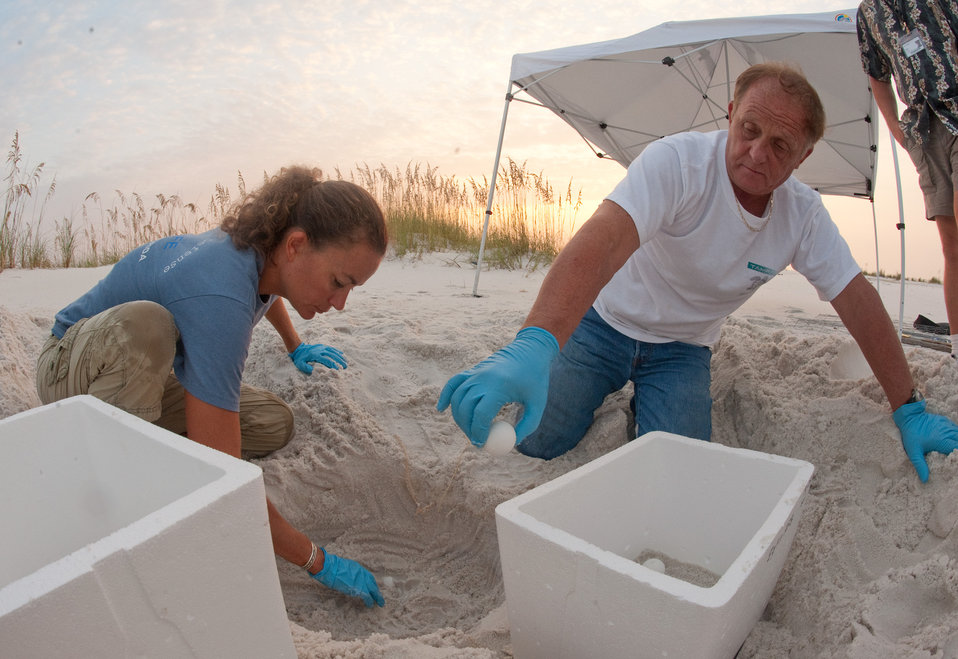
Turtle Eggs avoid Gulf Oil Danger

Working on a beach at Eglin Air Force Base, Fla., Bob Miller (right) slowly lowers a Loggerhead sea turtle egg into a Styrofoam cooler lined with the white sand, while Kelley Anderson-Nunley uses her fingertips to clear sand away from the sides of another egg. More than 300 eggs have been transported to Cape Canaveral, Fla., in hopes of diverting the hatchlings from possible life-threatening exposure to the oil slicks in the Gulf of Mexico. Mr. Miller is a biologist with the 96th Civil Engineer Squadron and the sea turtle program manager at Eglin AFB and Ms. Anderson-Nunley is a contract wildlife technician with Colorado State University in Fort Collins, Colo.